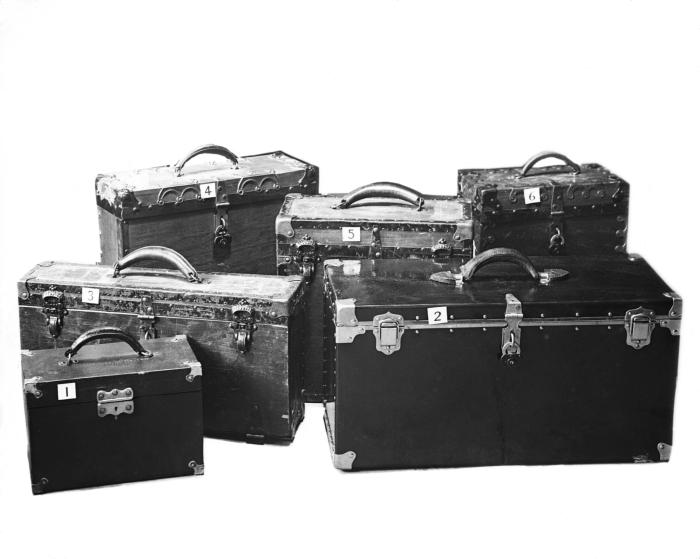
This historic 1915 photograph depicted a portable emergency hypochlorite plant, packed and ready for shipment. Kits such as this were used by the Minnesota State Board of Health, Division of Sanitation, and contained a complete field equipment station for administering, and testing hypochlorite treatment of a potable water supply.